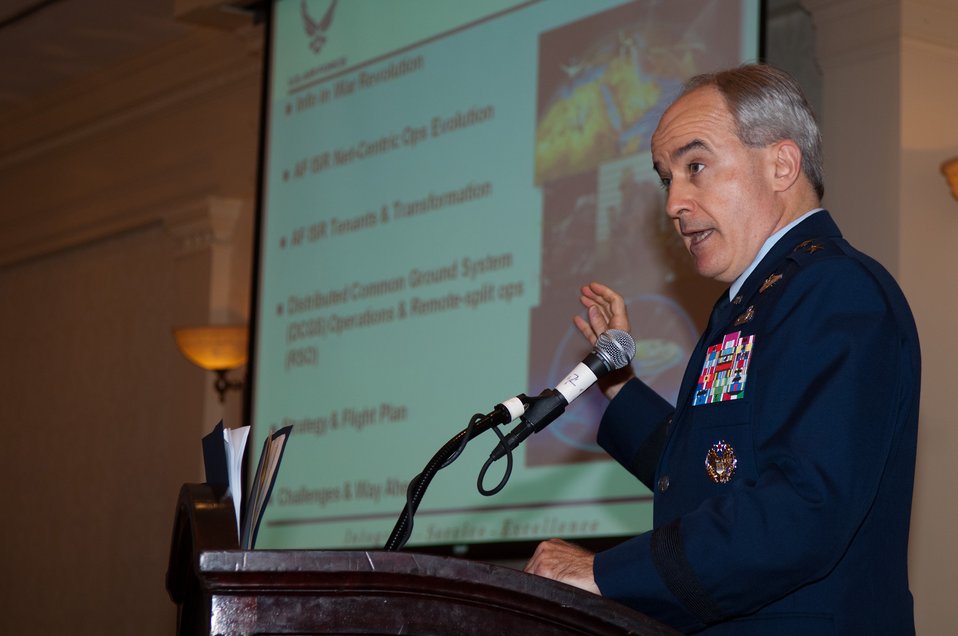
Net-Centric Ops

Maj. Gen. James Poss, assistant deputy chief of staff for intelligence, surveillance and reconnaissance, addresses attendees at the 2010 Net-centric Operations Conference Sept. 20, 2010, in New Castle, N.H.